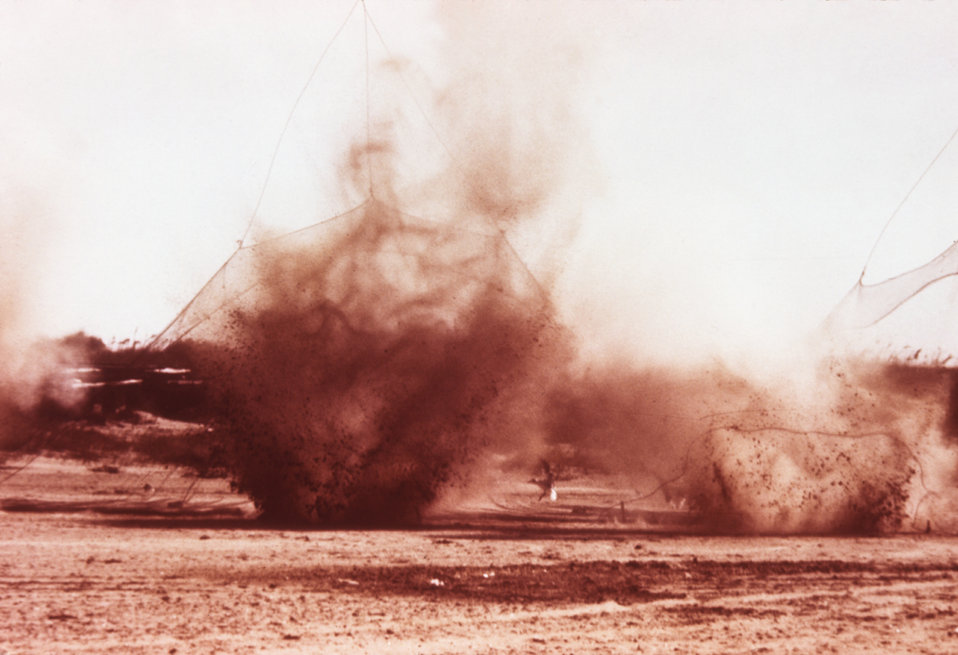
This photograph shows the firing of cannon nets during the attempted capture of birds during an arbovirus field study.